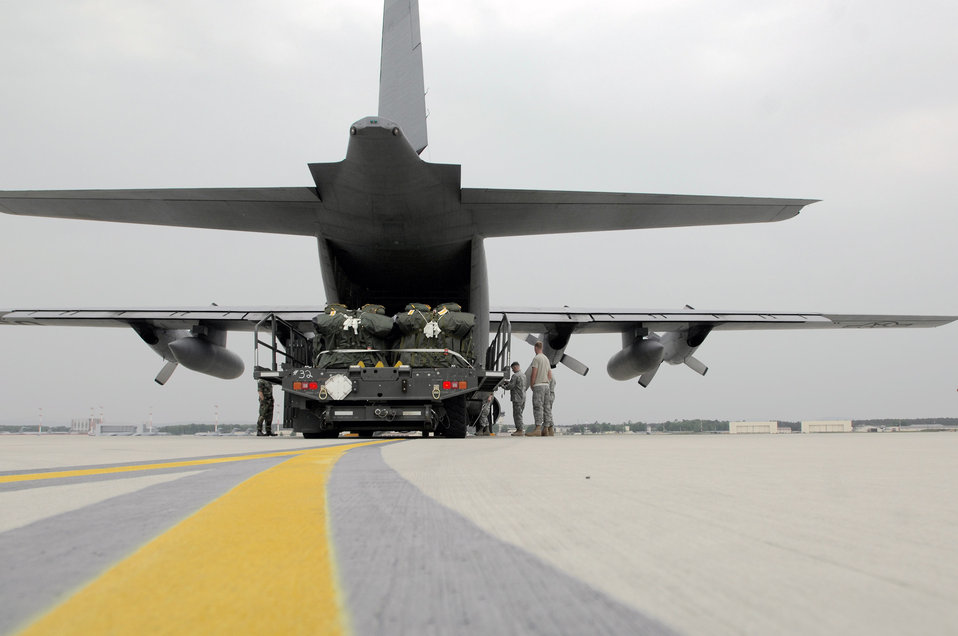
Loading up to support NASA

Members of the 1st Combat Communication Squadron and 37th Airlift Squadron prepare to load lifesaving equipment onto a C-130 Hercules May 9 at Ramstein Air Base, Germany. The Airmen supported NASA's launch of Space Shuttle Atlantis May 11.